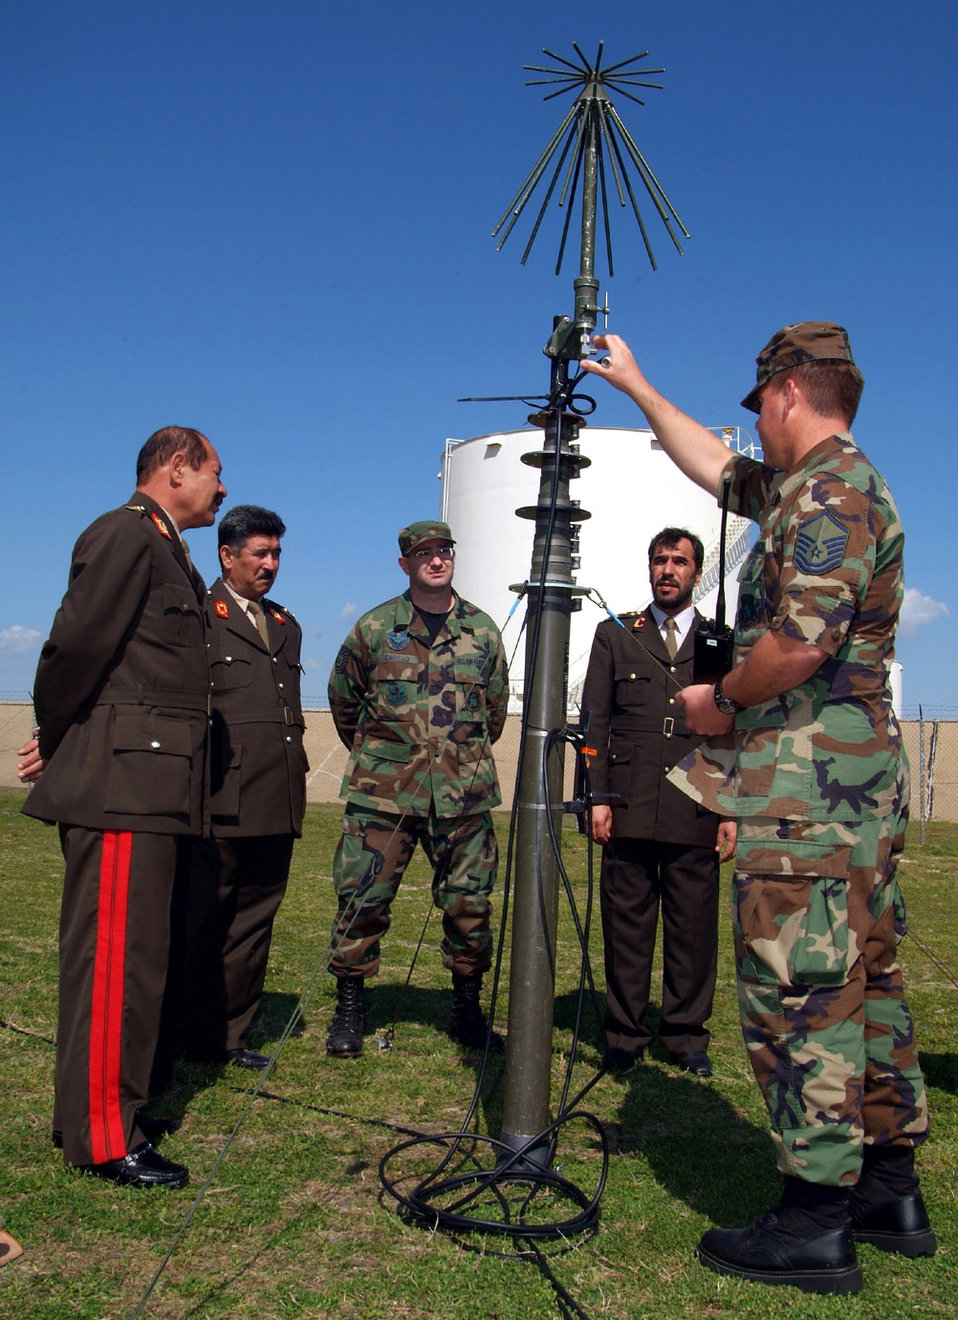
Afghan generals visit Air Force training facilities

Major Gen. Mehrab Ali, Brig. Gen. Baba Mirza, Tech. Sgt. Joseph Carello, Col. Said Farooq Yosuf Zai and Master Sgt. Edward Rush discuss the features of a 50-foot telescoping mast assembly and capabilities of the UHF omni-directional antenna used for tactical ground-to-air communications. The officers are members of the Afghan National Army.Sergeants Carello and Rush are instructors with the 338th Training Squadron at Keesler Air Force Base, Miss.